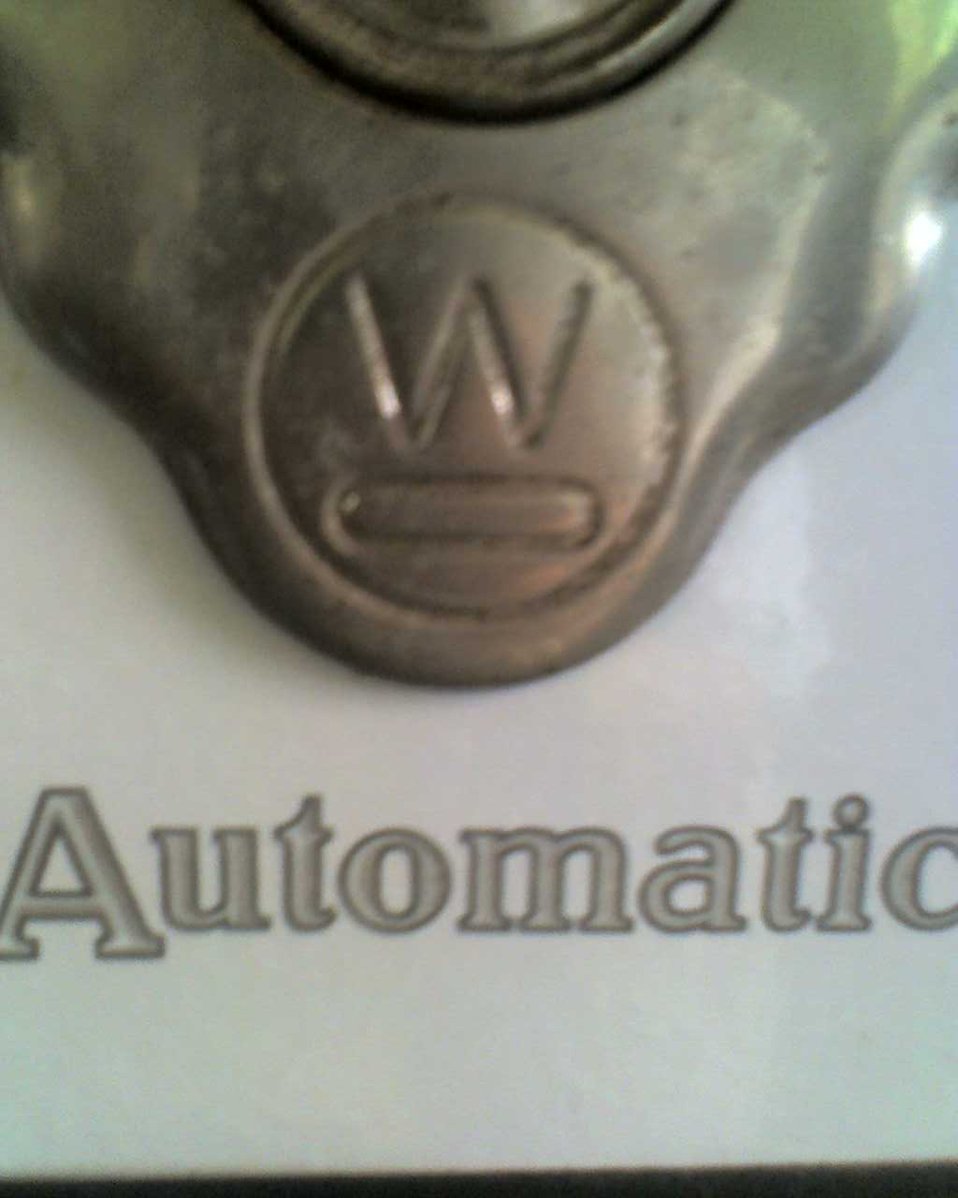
Photo of Westinghouse stove in kitchen of John and Mable Ringling Estate, Sarasota